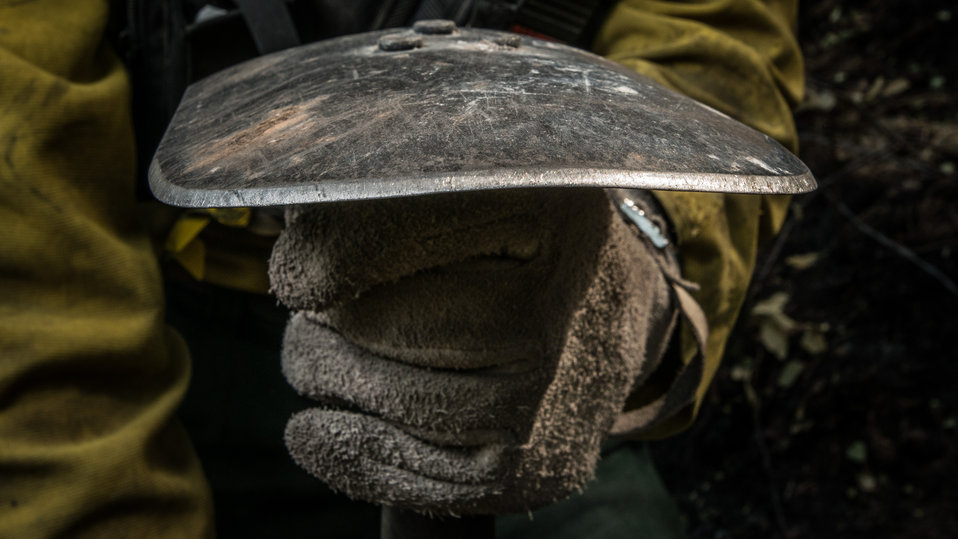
John Alexander Roebuck, Choctaw, Incident Commander Type 5, uses a complex application of tape on his Combi-tool to identify his from someone else's hand tool. The tool is part right-angle shovel and part pick that quickly loosens and drags fire fuels such as fallen wood debris to one side in the formation of a shallow trench line that will help break a fire's progression, during Beaver Creek Fire operations, near Hailey, ID, in the interface of U.S. Department of Agriculture (USDA) Forest Service (FS) and Sawtooth National Forest and Bureau of Land Management (BLM) lands, on Wednesday, Aug 21, 2013.